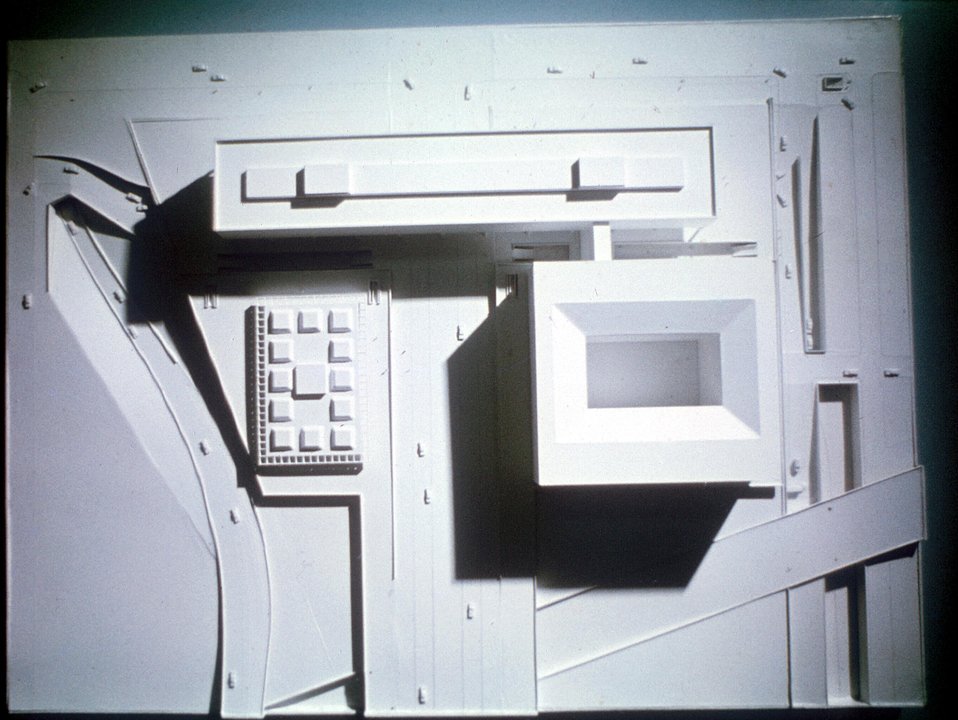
Federal Office building No. 5 Washington DC